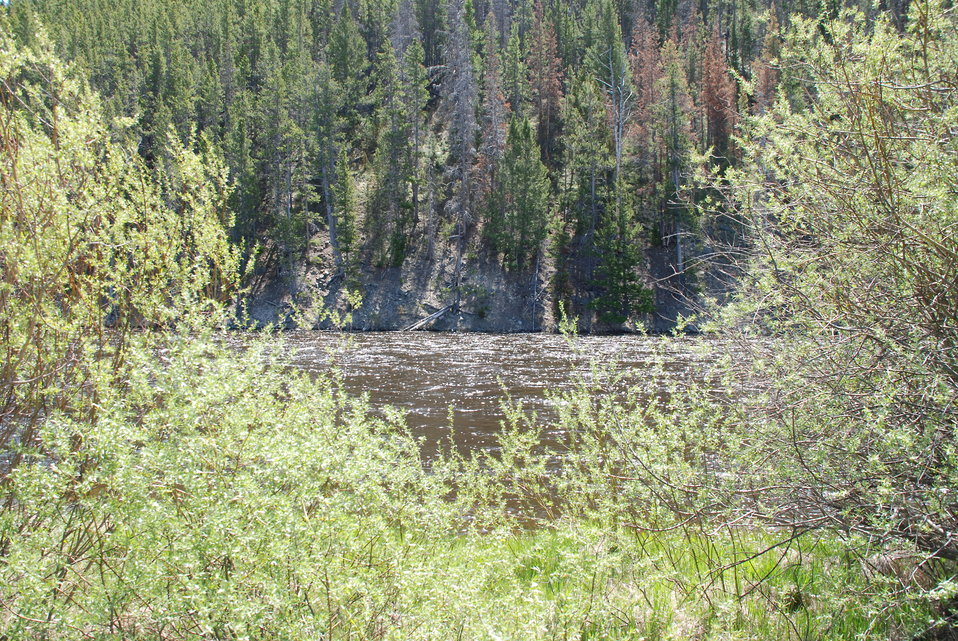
Regional Leadership Visit to Montana 2014